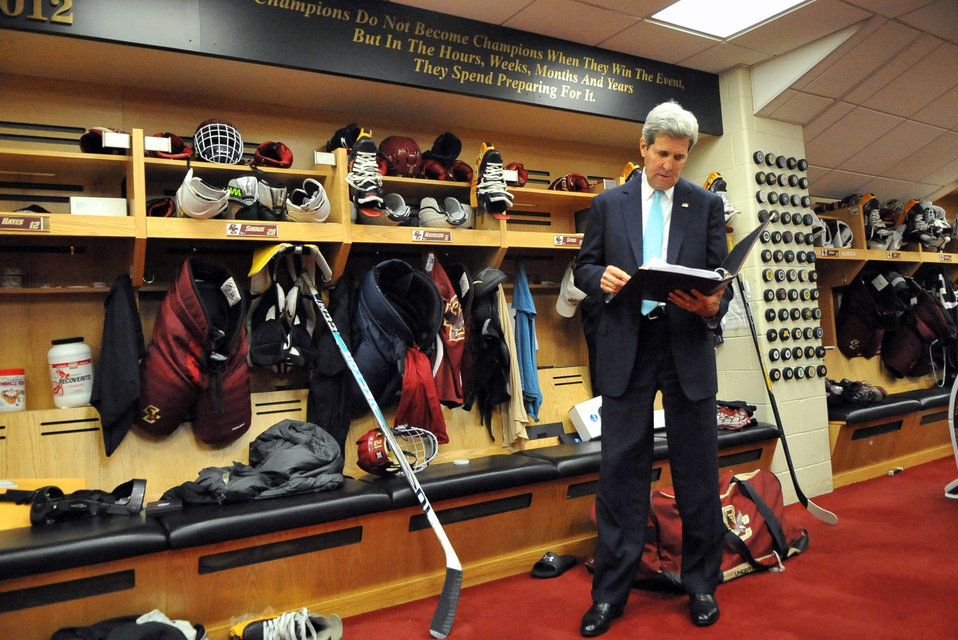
Secretary Kerry Reviews Boston College Remarks in Hockey Locker Room

U.S. Secretary of State John Kerry stands in the varsity men's hockey locker room as he reviews his remarks before delivering the commencement address at Boston College in Boston, Massachusetts, on May 19, 2014.